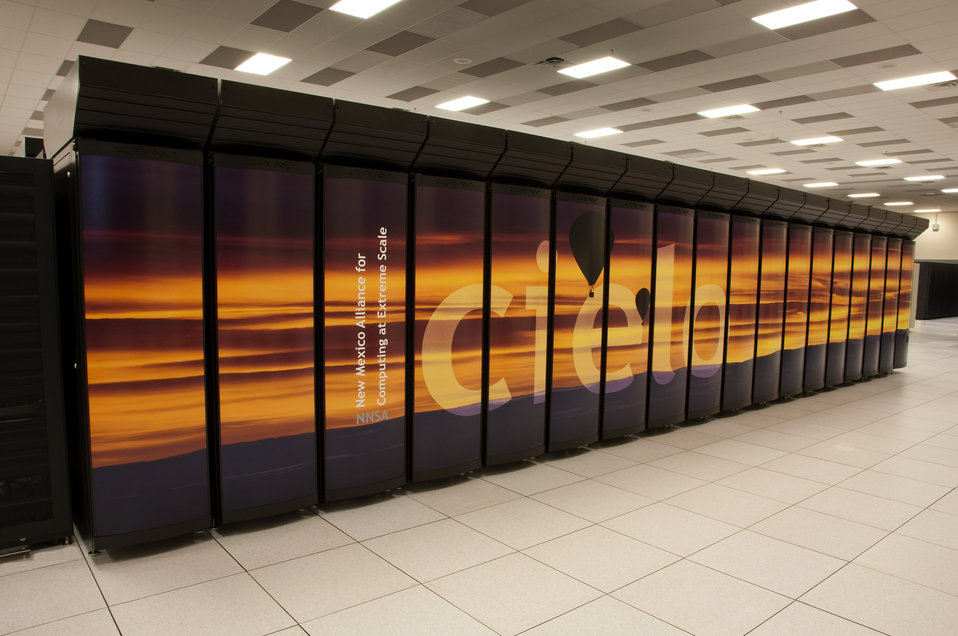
Cielo supercomputer at Los Alamos.

Cray Inc. delivered the new supercomputing platform to all three National Nuclear Security Administration (NNSA) national laboratories: Los Alamos, Sandia and Lawrence Livermore. This petascale supercomputer will help NNSA ensure the safety, security and effectiveness of the nuclear stockpile while maintaining the moratorium on testing.